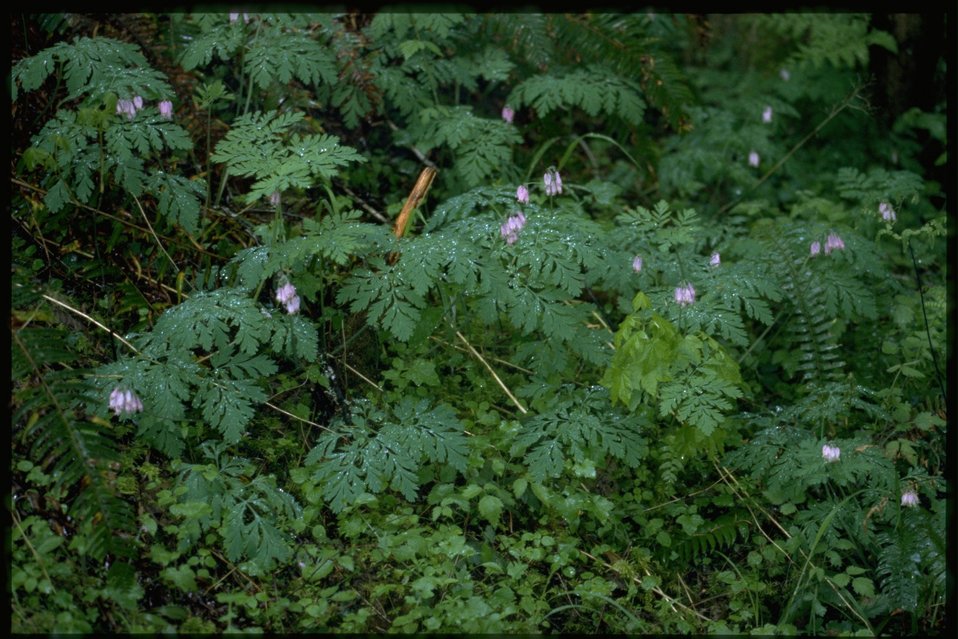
Farshot of Pacific Bleeding Heart (Dicentra formosa).